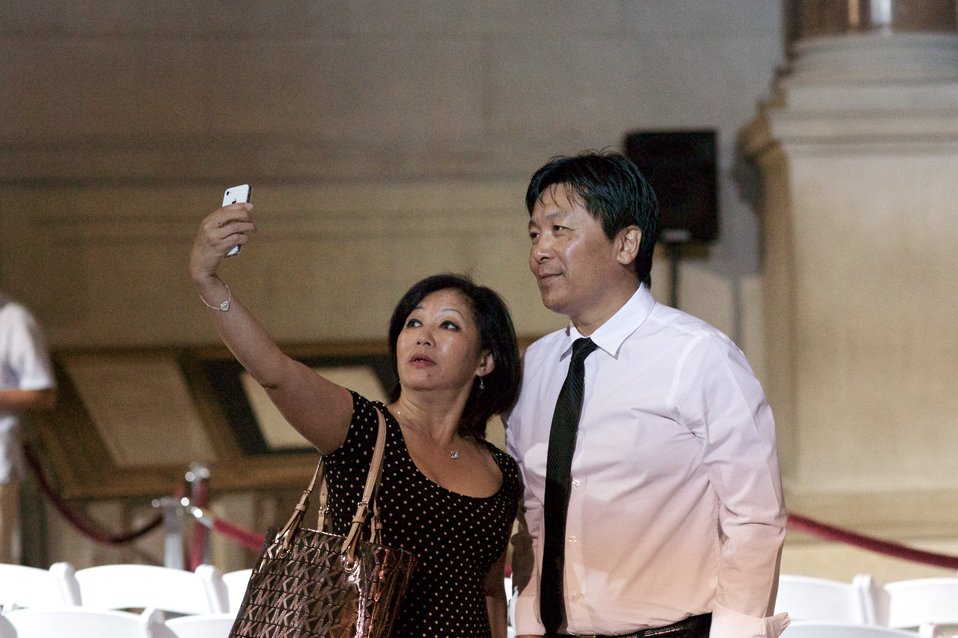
Naturalization Ceremony with Michelle Obama